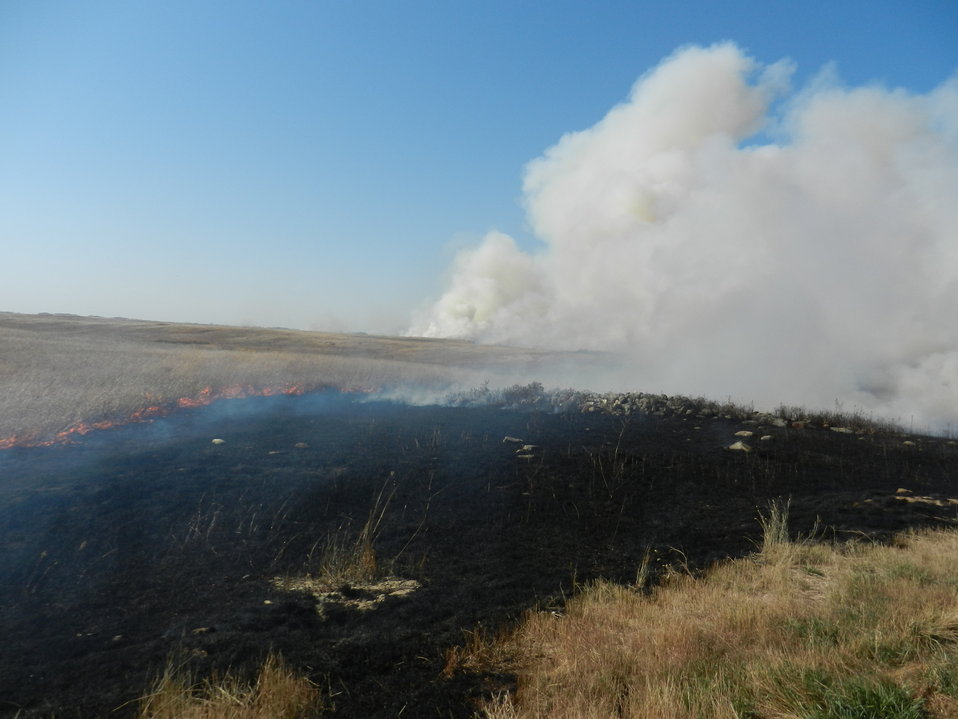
Fall Prescribed Burning on Des Lacs Refuge